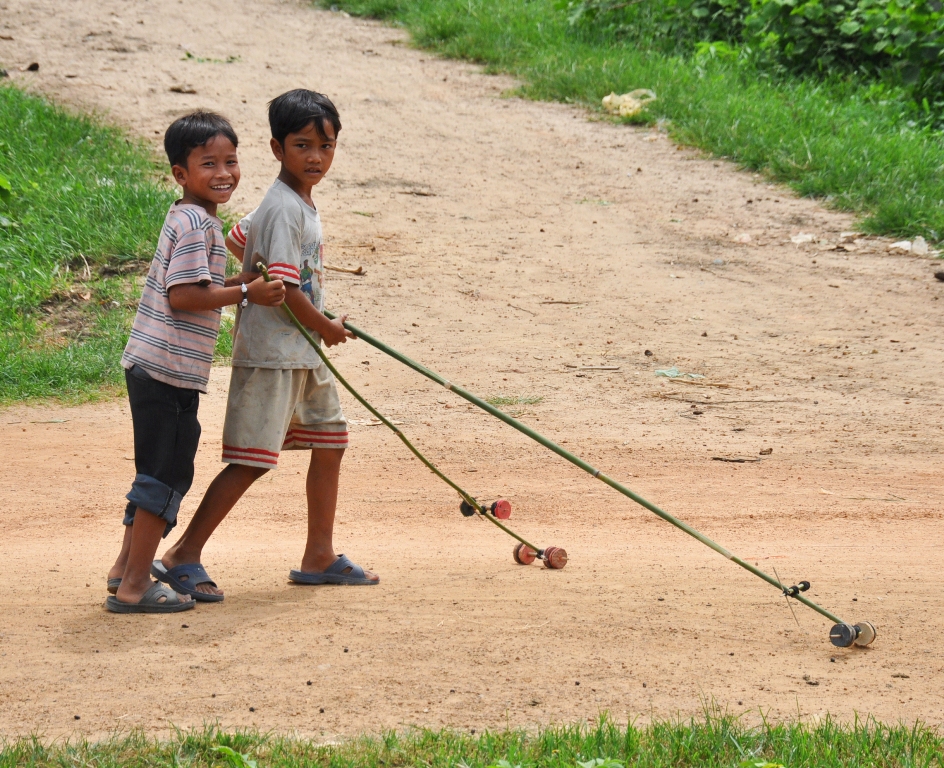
Farmers and their families in rural, central Vietnam profit from cocoa farming with USAID-sponsored training and support.